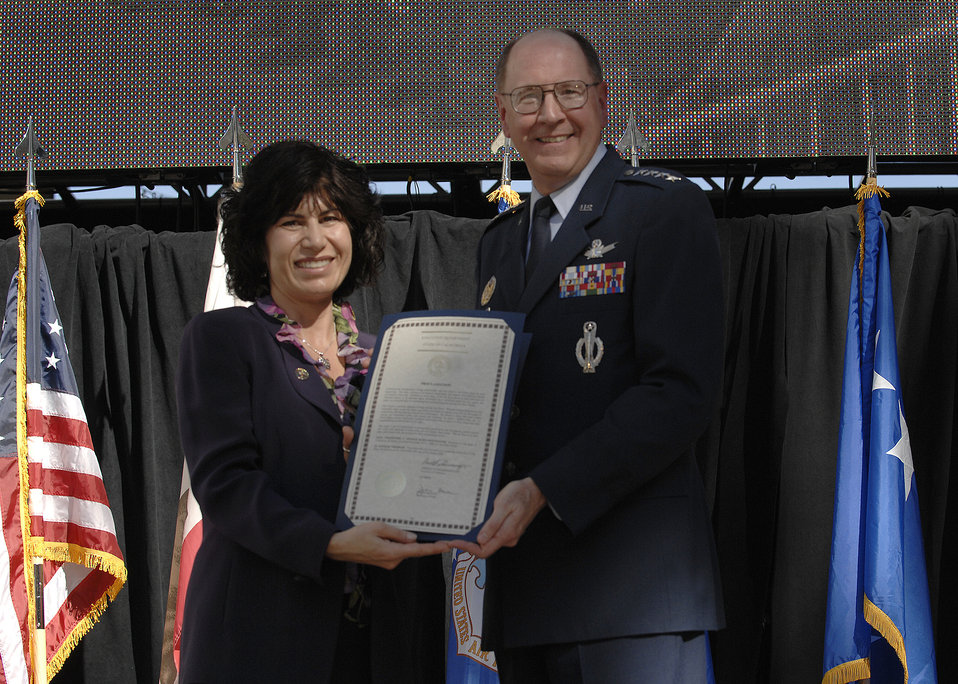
Air Force Week kicks off in Los Angeles

Gen. C. Robert